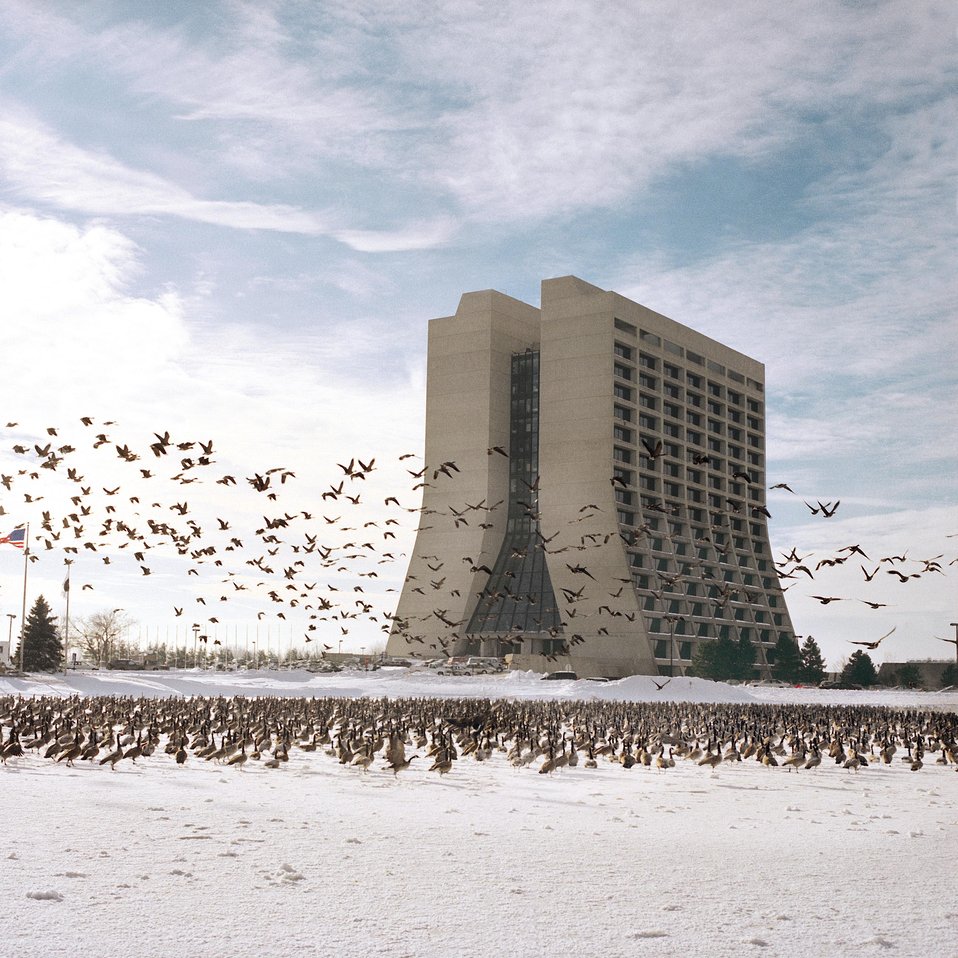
CANADA GEESE TAKE FLIGHT OVER FROZEN LAKE ON A COLD DAY IN FRONT OF WILSON HALL AT THE FERMI NATIONAL ACCELERATOR LABORATORY SITE.

THE FERMI NATIONAL ACCELERATOR LAB ADVANCES THE UNDERSTANDING OF THE FUNDAMENTAL NATURE OF MATTER AND ENERGY BY PROVIDING LEADERSHIP AND RESOURCES FOR QUALIFIED RESEARCHERS TO CONDUCT BASIC RESEARCH AT THE FRONTIERS OF HIGH ENERGY PHYSICS AND RELATED DISCIPLINES.